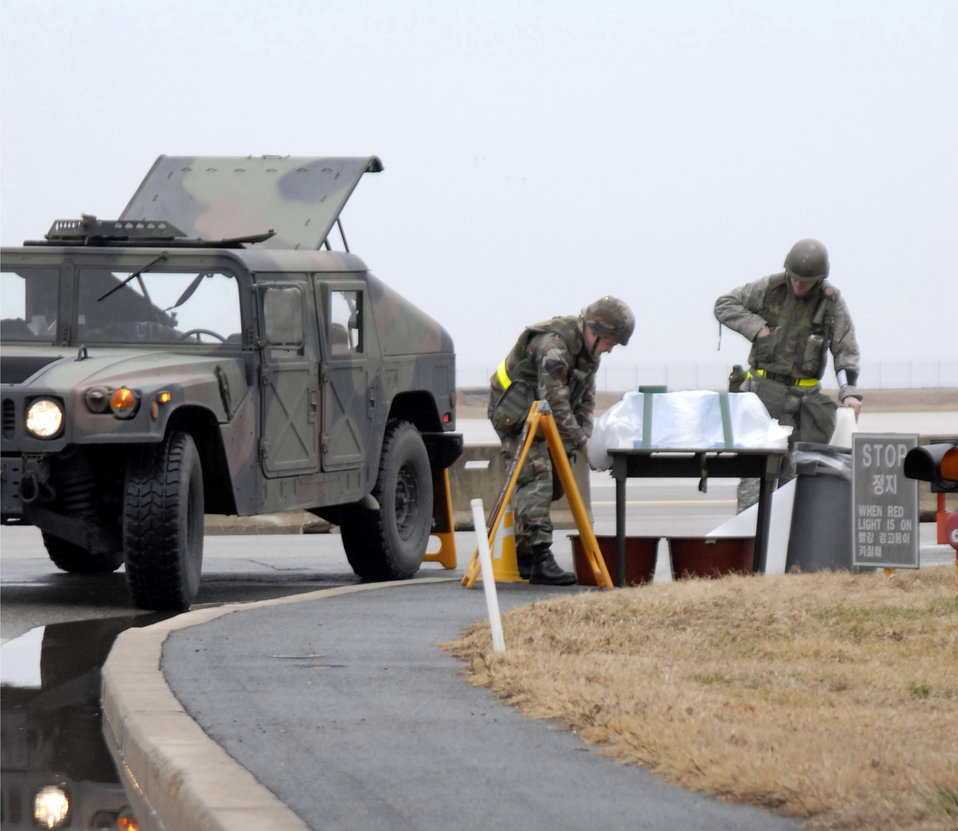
Stop here

Airmen set up a zone transition point during a local operational readiness exercise Feb. 22 at Kunsan Air Base, South Korea. The local exercise tests the wing's ability to effectively operate in a simulated wartime environment.